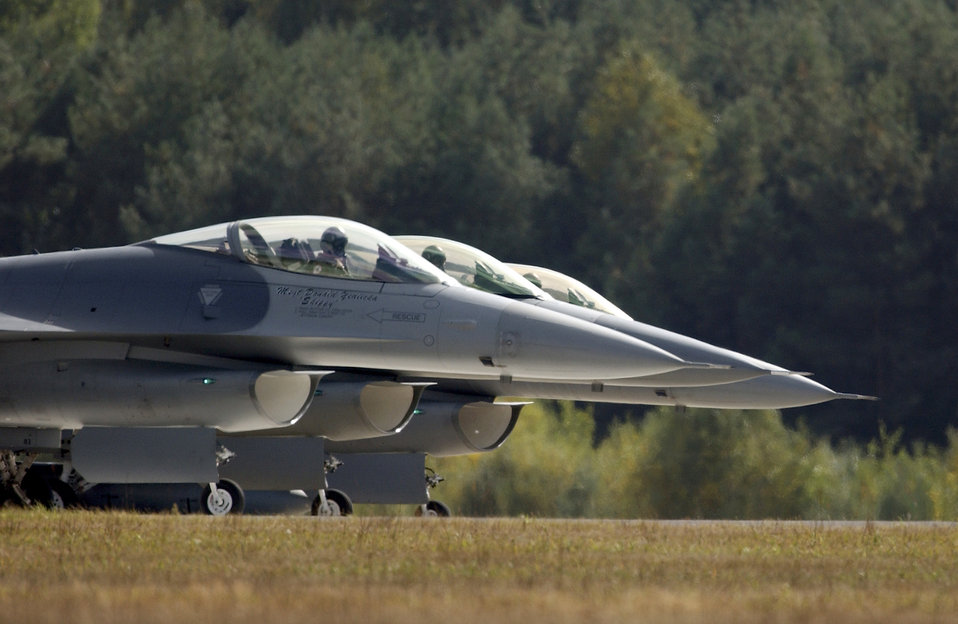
Falcons in Poland

LASK AIR BASE, Poland -- F-16 Fighting Falcons from the 182nd Fighter Squadron prepare to take off for training missions here Sept. 16. The Texas Air National Guard's 182nd Fighter Squadron is here to familiarize members of the Polish Air Force with F-16 capabilities. The squadron is from Lackland Air Force Base, Texas.